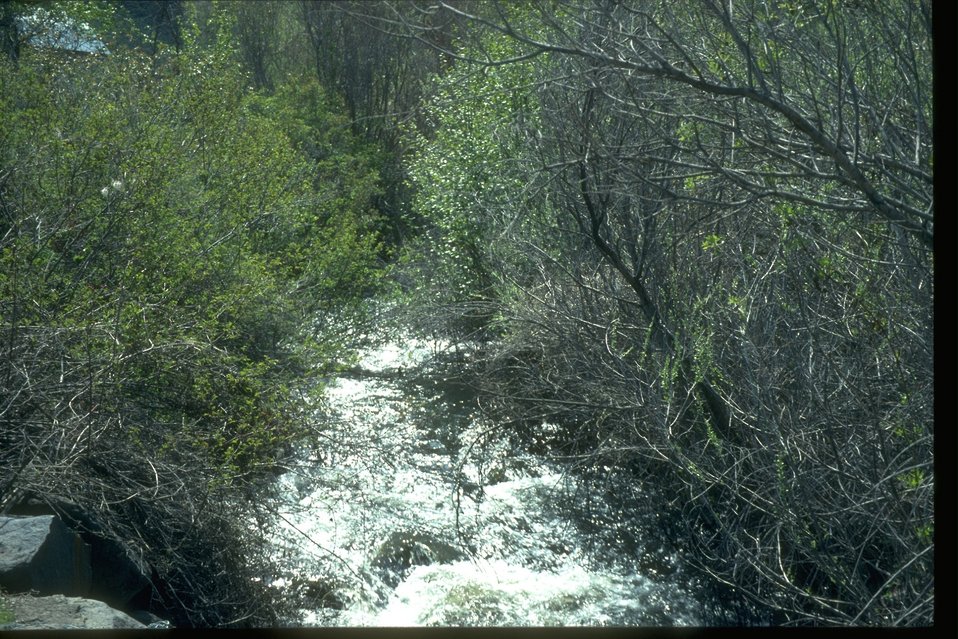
Colockum Creek functioning properly in Central Washington.